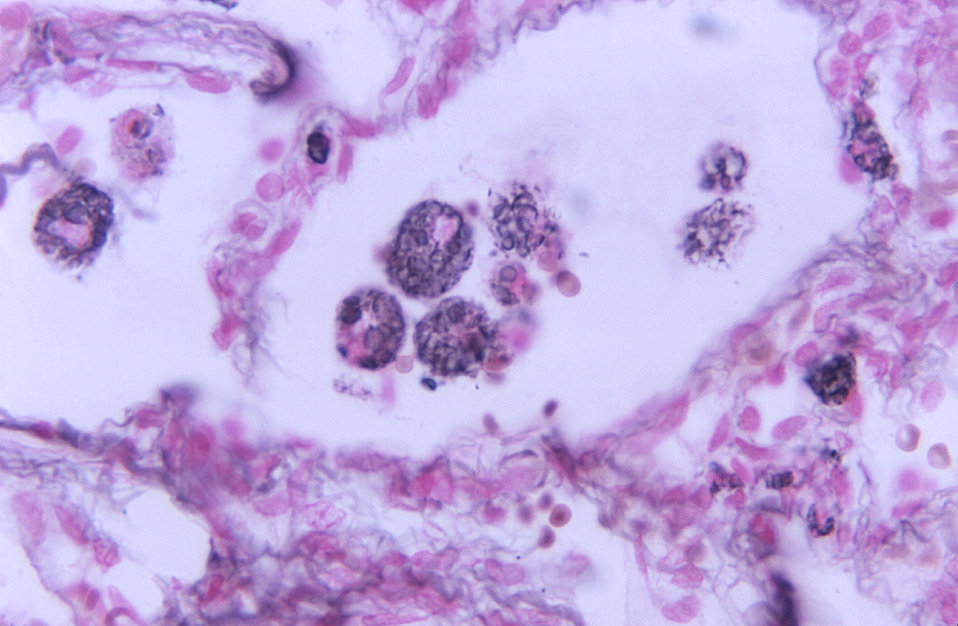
Under a magnification of 800X, this methenamine silver-stained photomicrograph of a lung lesion tissue specimen, revealed some of the cytoarchitectural morphology associated with the disease cryptococcosis due to the infiltration of Cryptococcus. sp. fungal organisms.